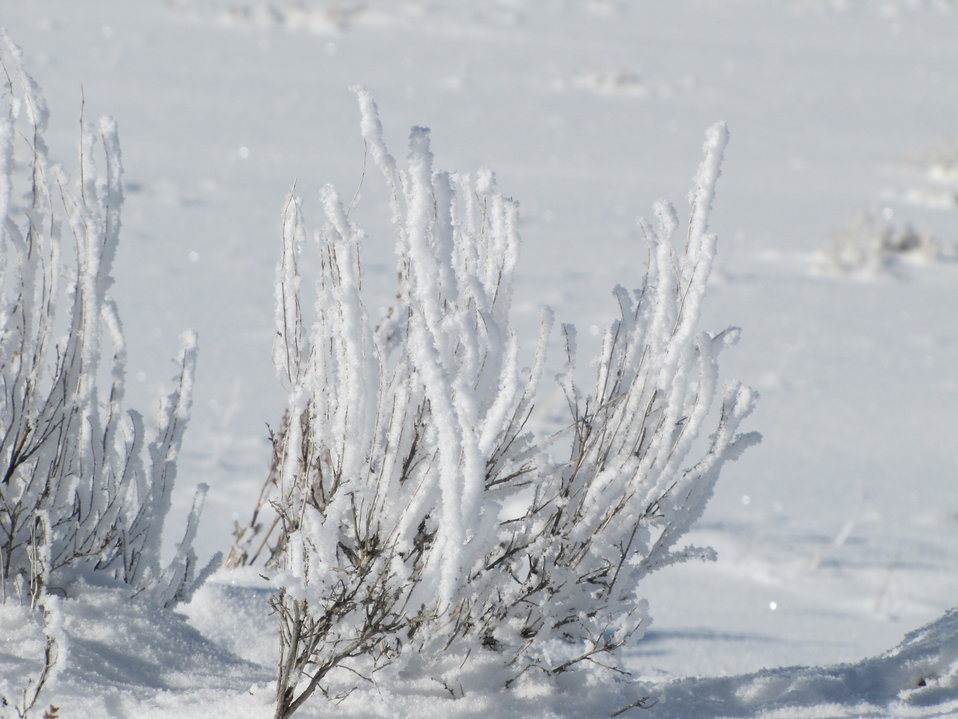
Hoarfrost

The hoarfrost is thick on the vegetation on a subzero winter morning.